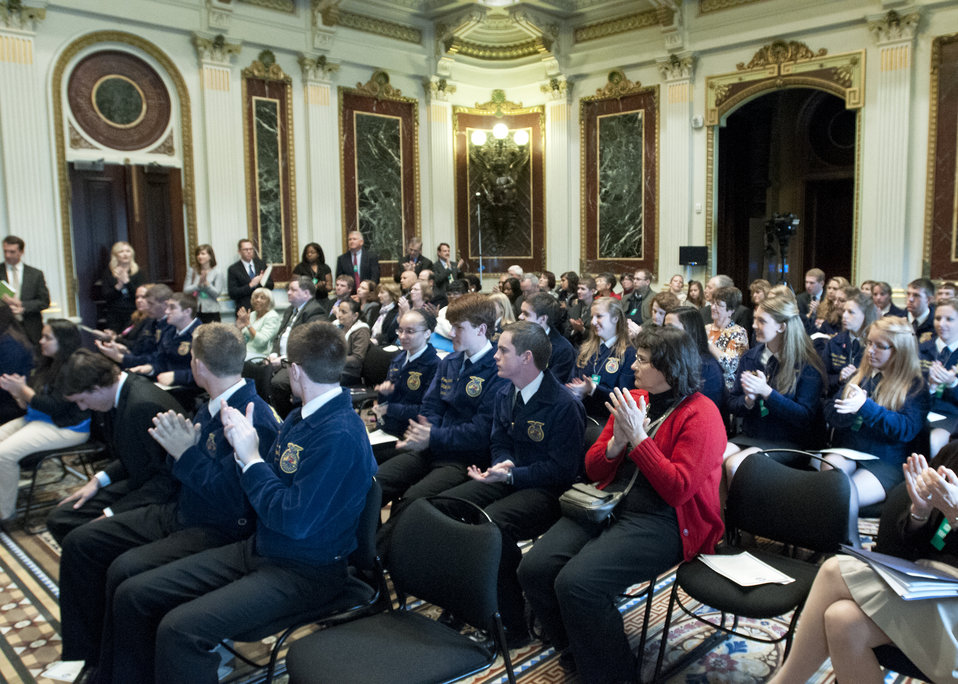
12 members of FFA and 4-H are recognized as Champions of Change at the Executive Office Building in Washington, D.C. on Tuesday, Oct. 9, 2012. The Champions of Change program was created to honor ordinary Americans doing great work in their communities. Each week, a different sector is highlighted and groups of Champions, ranging from educators, entrepreneurs and community leaders, are recognized for the work they are doing to serve and strengthen their communities.